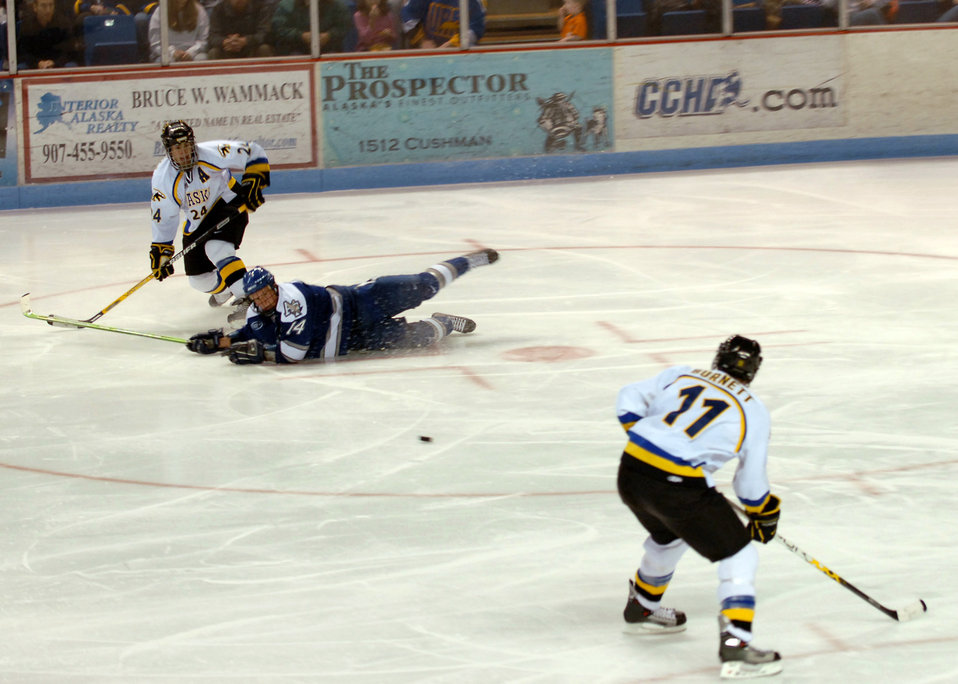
Falcons face tough ice foe

Cadet 3rd Class Michael Mayra of the U.S. Air Force Academy Falcons tries to block the shot as T.J. Campbell of the University of Alaska-Fairbanks Nanooks passes to Lucas Burnett during a match at the Carlson Center downtown Fairbanks on Oct. 14. The Nanooks went on to win the game 8 to 4. The Falcons fell to 1-3 for the season.